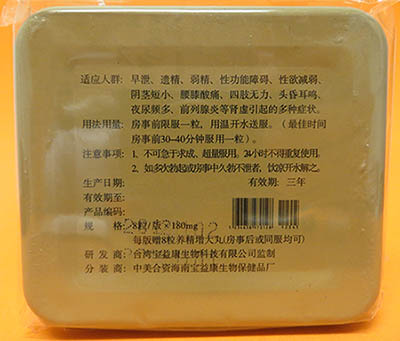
RECALLED – Dietary Supplement

July 5, 2013 – Product Recall – Hardmenstore.com Issues Voluntary Nationwide Recall of Silver Sword and Clalis at the Request of the FDA.